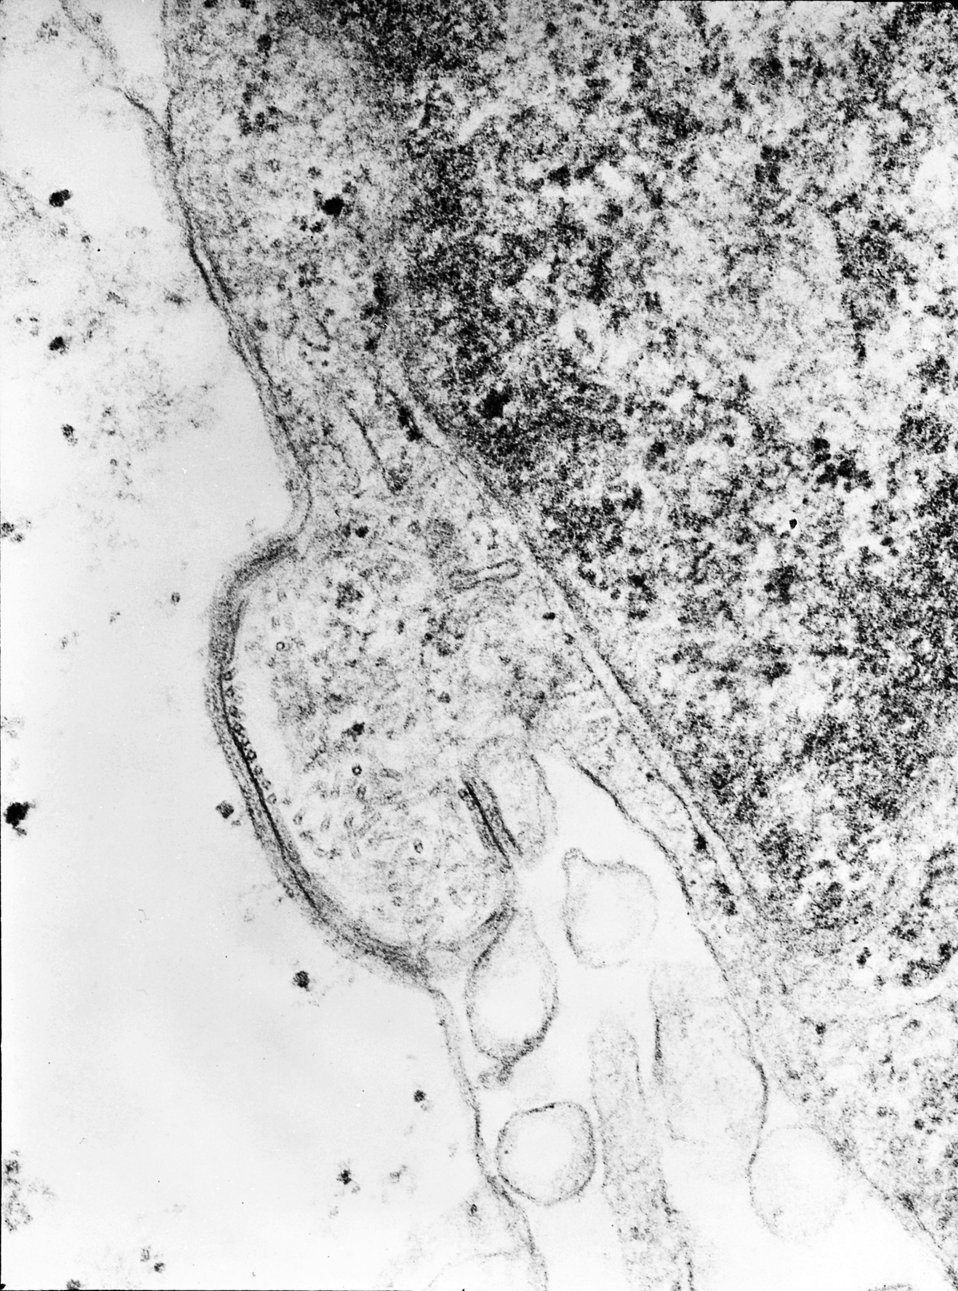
This transmission electron micrograph (TEM) revealed the presence of the human parainfluenza type 4A virus (HPIV-4A), which like the mumps virus, is also a Paramyxoviridae family member, and a member of the genus, Rubulavirus.